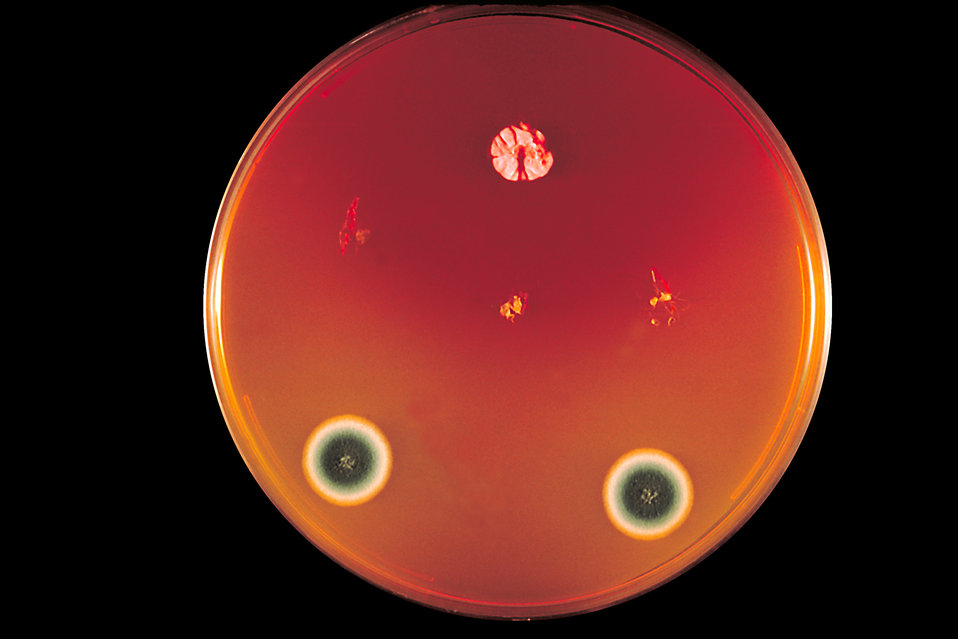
This was a DTM (Dermatophyte Test Medium) agar plate culture growing the fungus Trichophyton concentricum.